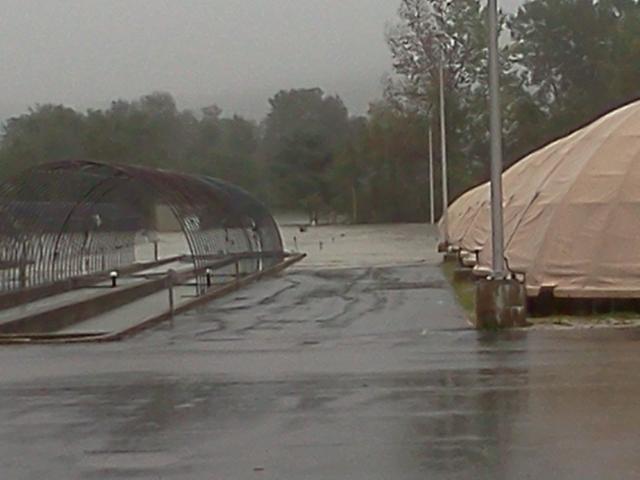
White River National Fish Hatchery

Flooding at the White River National Fish Hatchery in Bethel, Vt. after Hurricane Irene came through on Sunday, August, 28, 2011.